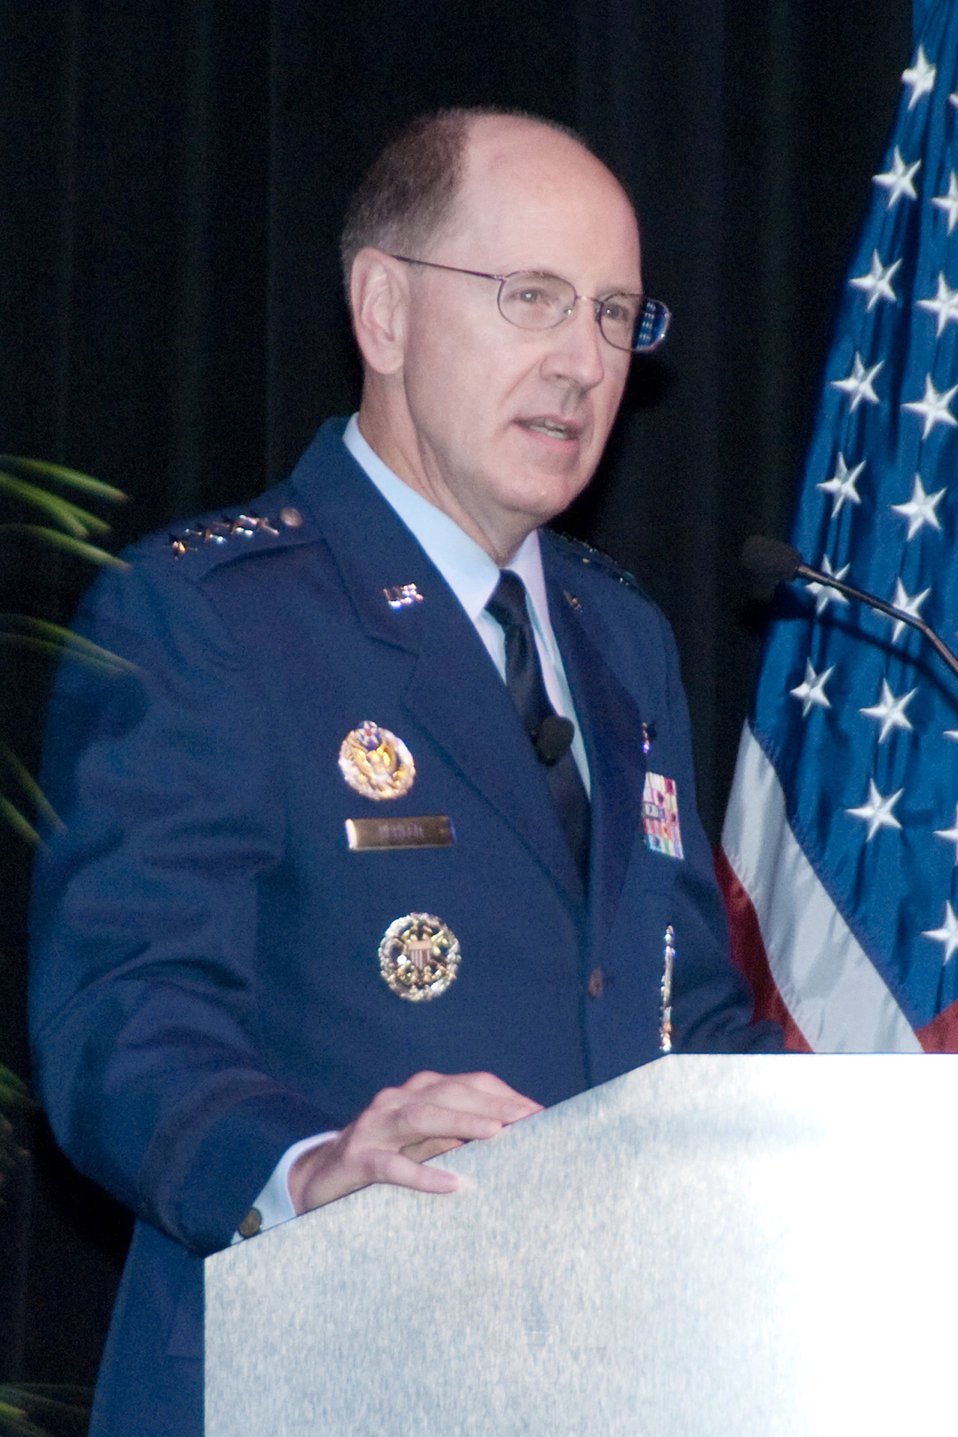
C2ISR Symposium

Gen. C. Robert Kehler, commander of Air Force Space Command, addresses the Air Force Command and Control, Intelligence, Surveillance and Reconnaissance Symposium Sept. 29, 2009, in Ledyard, Conn. The general is one of many Air Force and corporate leaders to make presentations at the symposium.